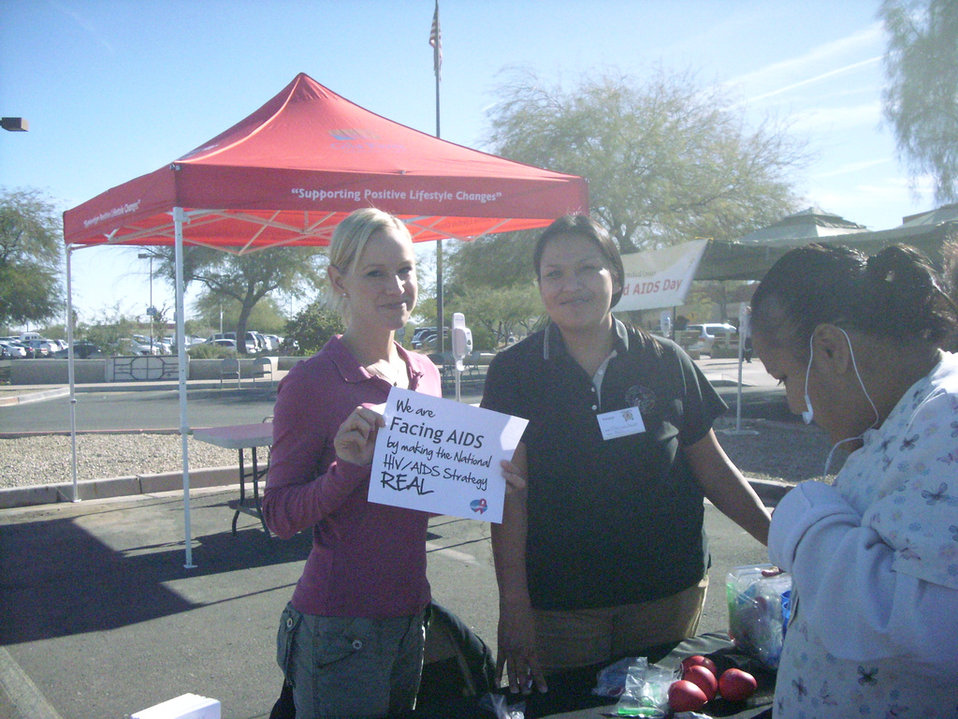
We are Facing AIDS through NHAS-05